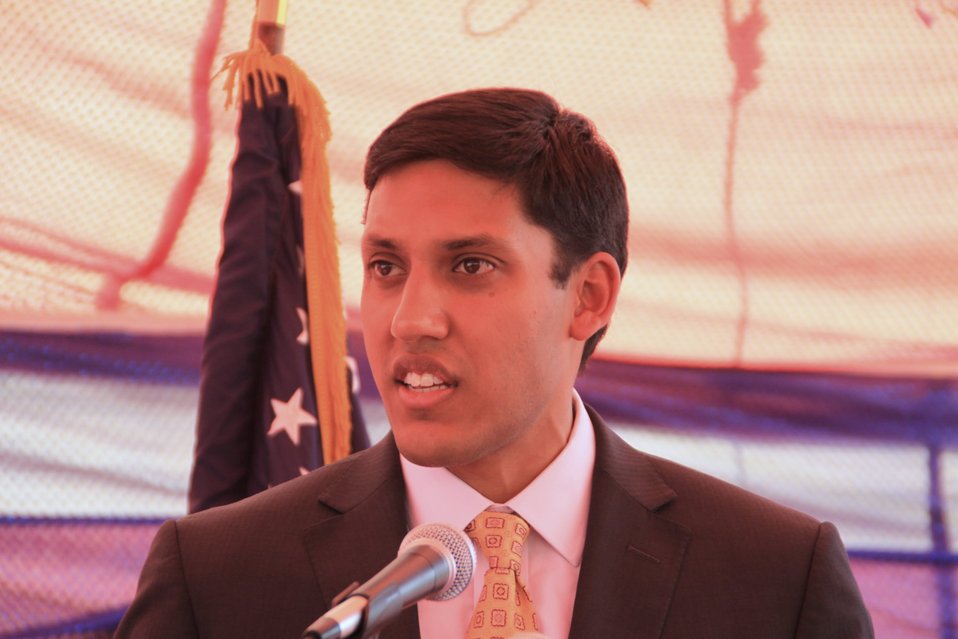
Badam Bagh Farm